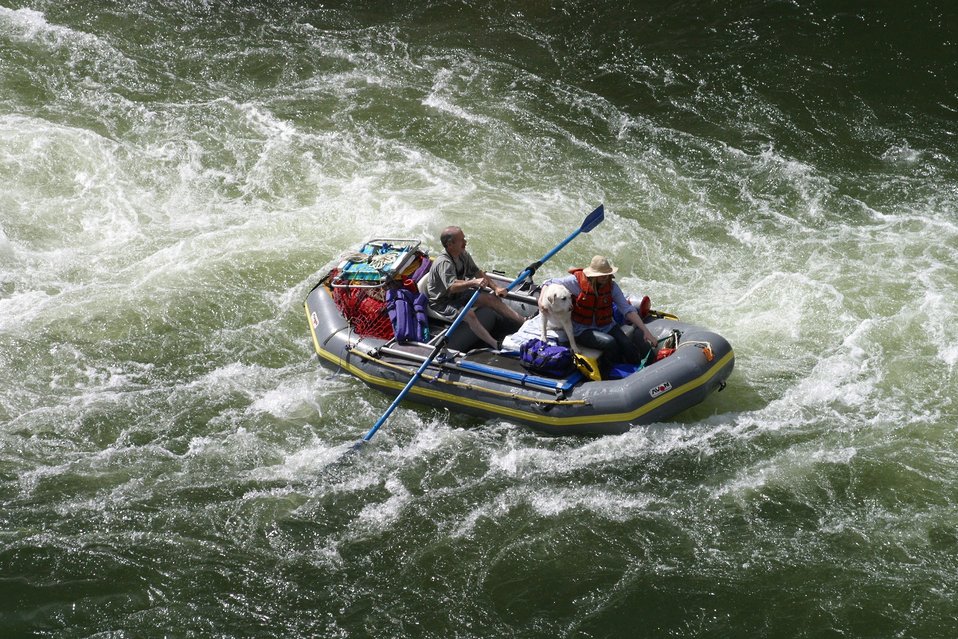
Boaters in Grave Creek Rapids